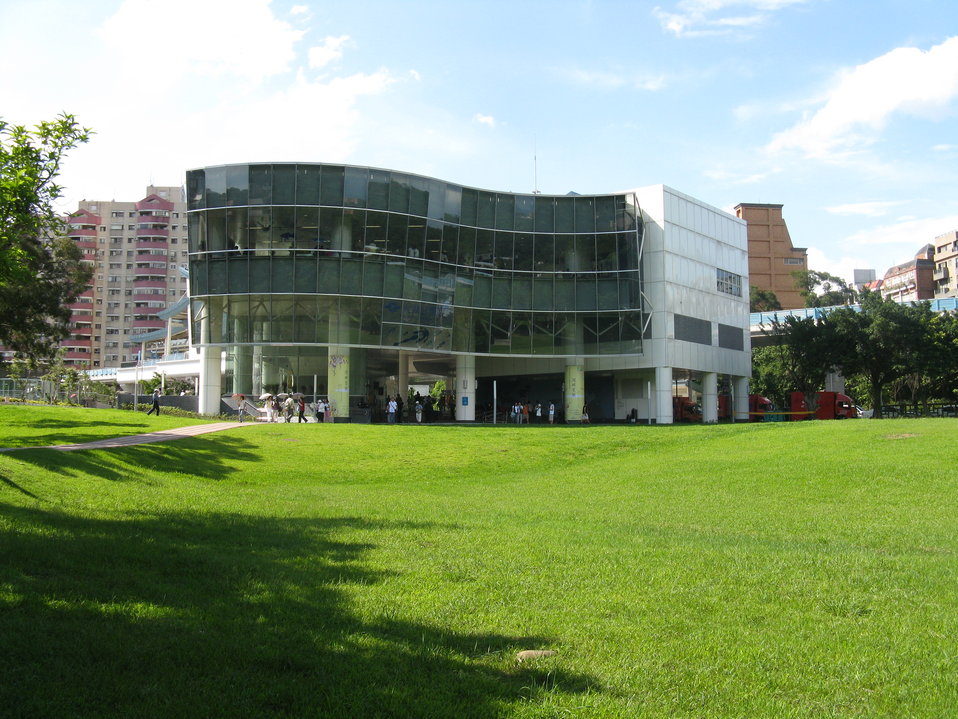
日本語: 台北捷運内湖線大湖公園駅南口。